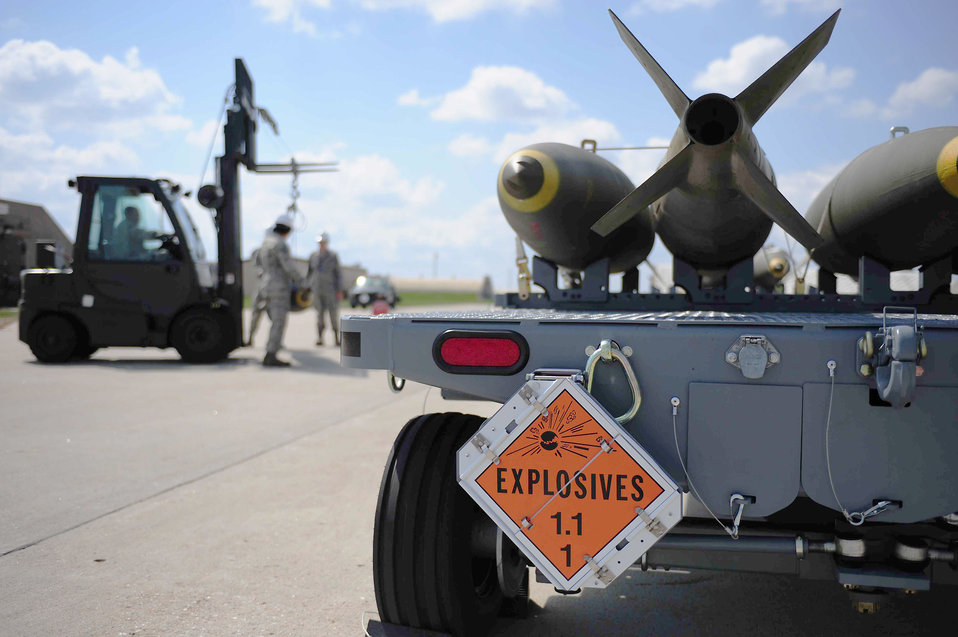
Warehousing the Mark 84 bomb

Munitions conventional maintenance crew members move a Mark 84 bomb, April 21, 2010, at Ellsworth Air Force Base, S.D. The Mark 84 is listed as an 1.1 explosives meaning it has a mass explosion hazard.